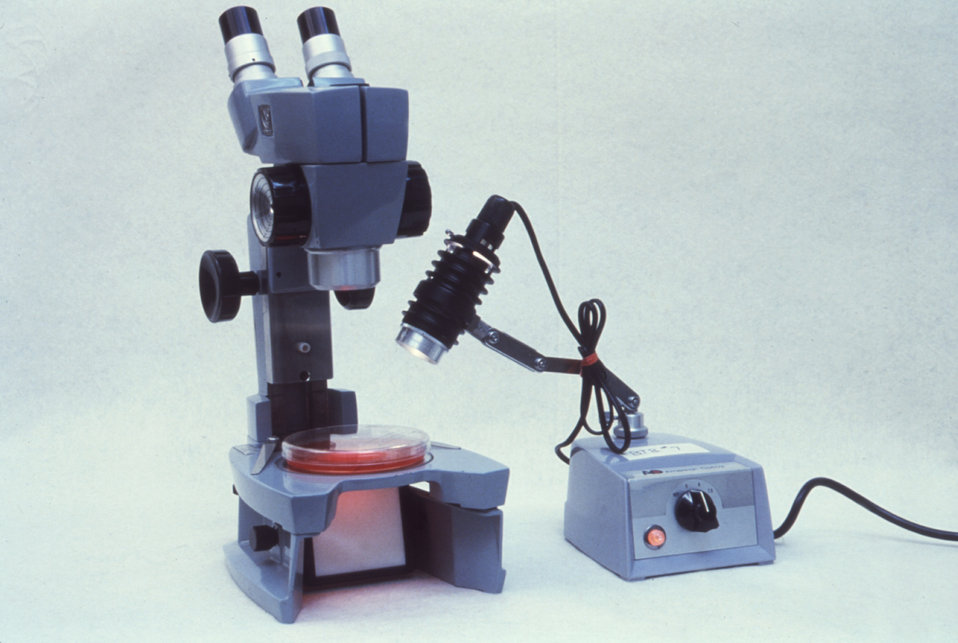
This is a properly lit dissecting microscope used to examine bacterial colonies grown on laboratory culture media.